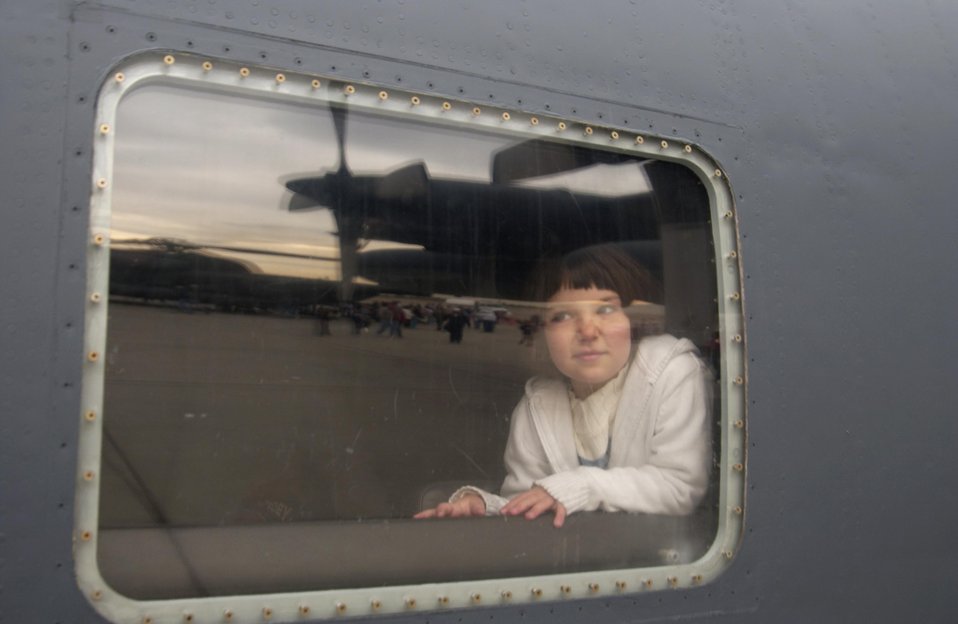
Aviation Nation at Nellis

Cris Barba looks out the window of an MC-130E Combat Talon I during Aviation Nation 2006 Nov. 11 at Nellis Air Force Base, Nev. Aviation Nation has been called one of the most diverse, entertaining and well run air shows in America. The show was held Nov. 11 and 12.